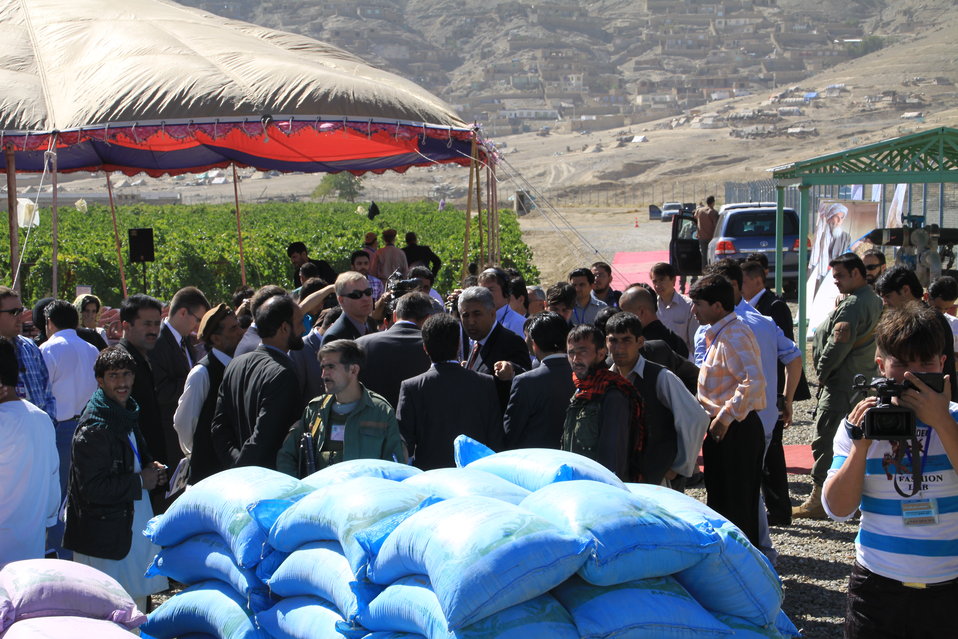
AVIPA Plus Wheat Seed Distribution 101005

US Ambassador Karl Eikenberry and USAID Acting Mission Director Kevin Brownawell joined the Minister of Agriculture, Irrigation and Livestock, H.E. Minister Mohammed Rahimi in signing a Memorandum of Understanding and distributing vouchers to area farmers for wheat and fertilizer.

US Ambassador Karl Eikenberry and USAID Acting Mission Director Kevin Brownawell joined the Minister of Agriculture, Irrigation and Livestock, H.E. Minister Mohammed Rahimi in signing a Memorandum of Understanding and distributing vouchers to area farmers for wheat and fertilizer.

US Ambassador Karl Eikenberry and USAID Acting Mission Director Kevin Brownawell joined the Minister of Agriculture, Irrigation and Livestock, H.E. Minister Mohammed Rahimi in signing a Memorandum of Understanding and distributing vouchers to area farmers for wheat and fertilizer.